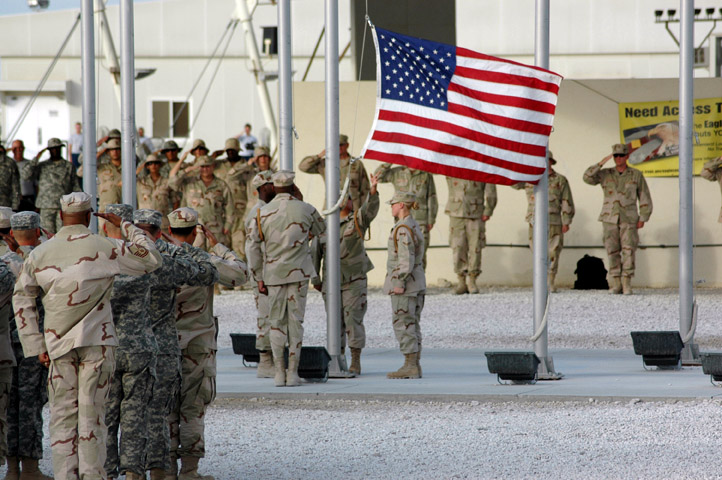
Expeditionary Wing celebrates Independence Day

Servicemembers stationed in Southwest Asia participate in a 4th of July retreat. The base had several events to celebrate the holiday to include live entertainment, a barbeque and a triathalon.